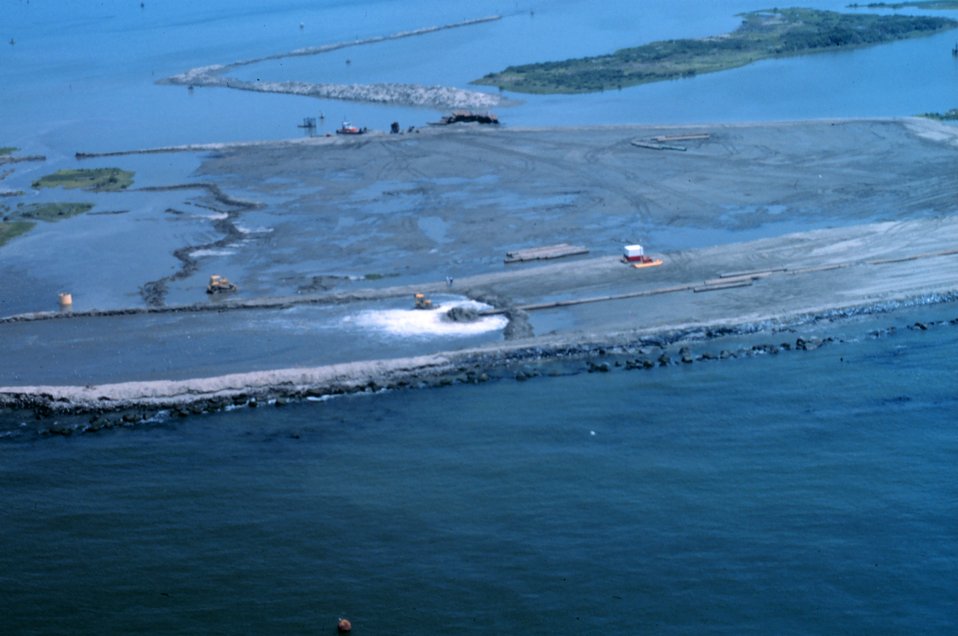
As seen from directly above the west end of the project.